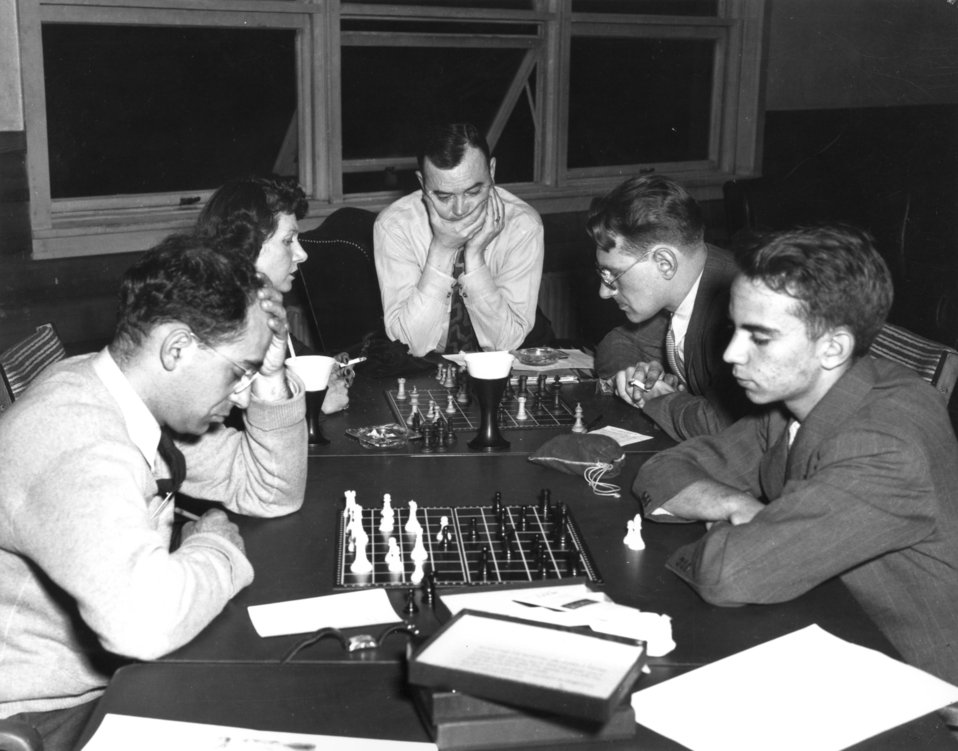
Recreation at Oak Ridge